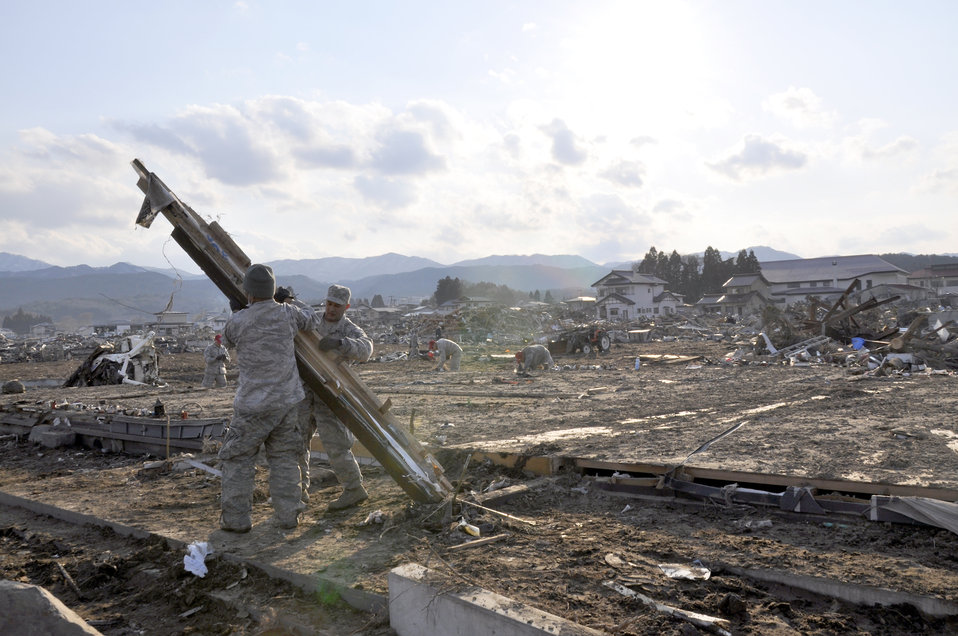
Airmen help with tsunami cleanup

Airmen lift a knocked-down section of a house March 29, 2011, in Noda Mura, Japan.